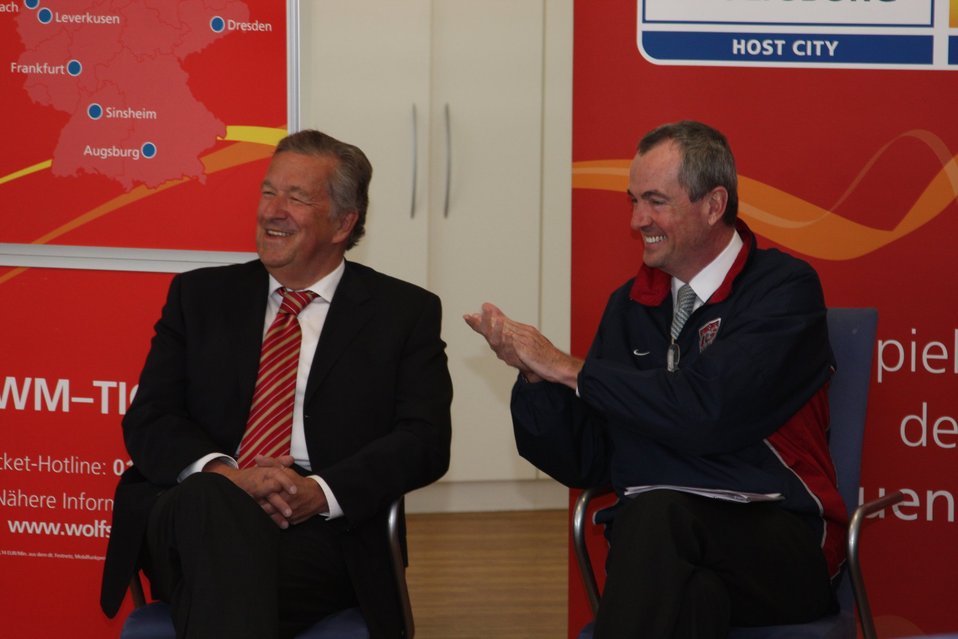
Ambassador Murphy Laughs with Lord Mayor of Wolfsburg Schnellecke

U.S. Ambassador to Germany Philip D. Murphy sits with the Lord Mayor of Wolfsburg, Rolf Schnellecke at a soccer workshop in Wolfsburg, Germany, on July 6, 2011.